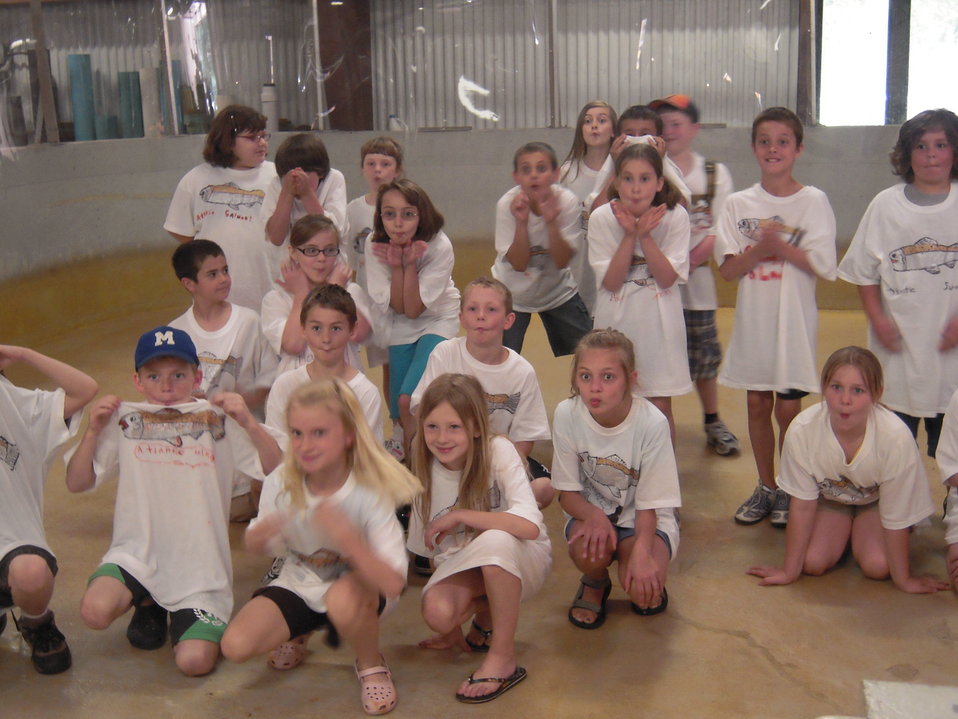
Looking like Atlantic salmon